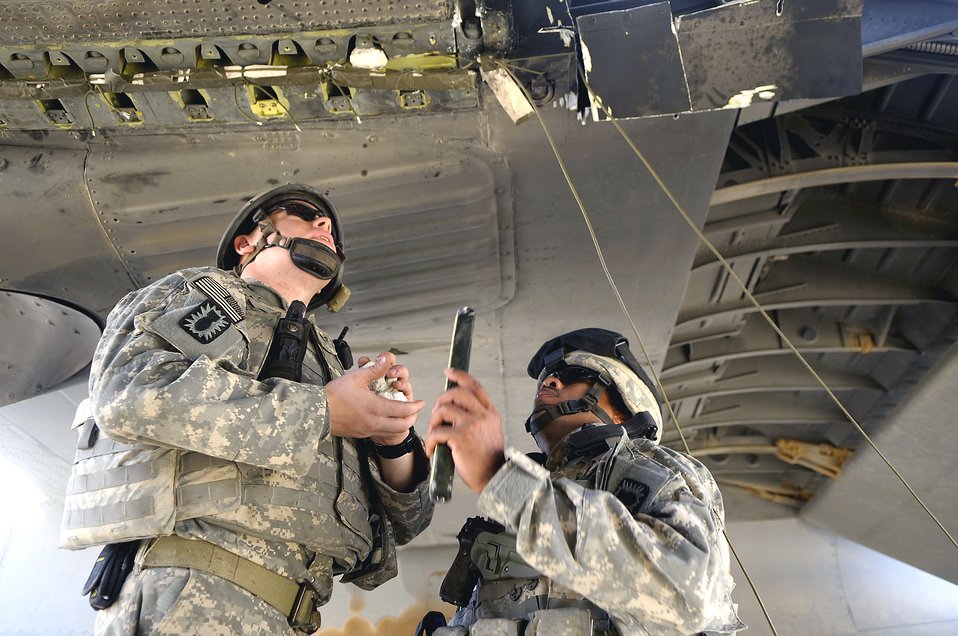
Operation Iraqi freedom

Senior Airman Anthony DeMarino, left, and Senior Master Sgt. Pervis King from the 447th Air Expeditionary Group's explosive Ordnance disposal team place a string of C-4 explosive around the wings of a C-130 Hercules aircraft that are designed to divide the plane into smaller sections so it can be moved July 7 in Baghdad, Iraq. The C-130 made an emergency landing in a field north of the Baghdad International Airport shortly after take-off on June 27.